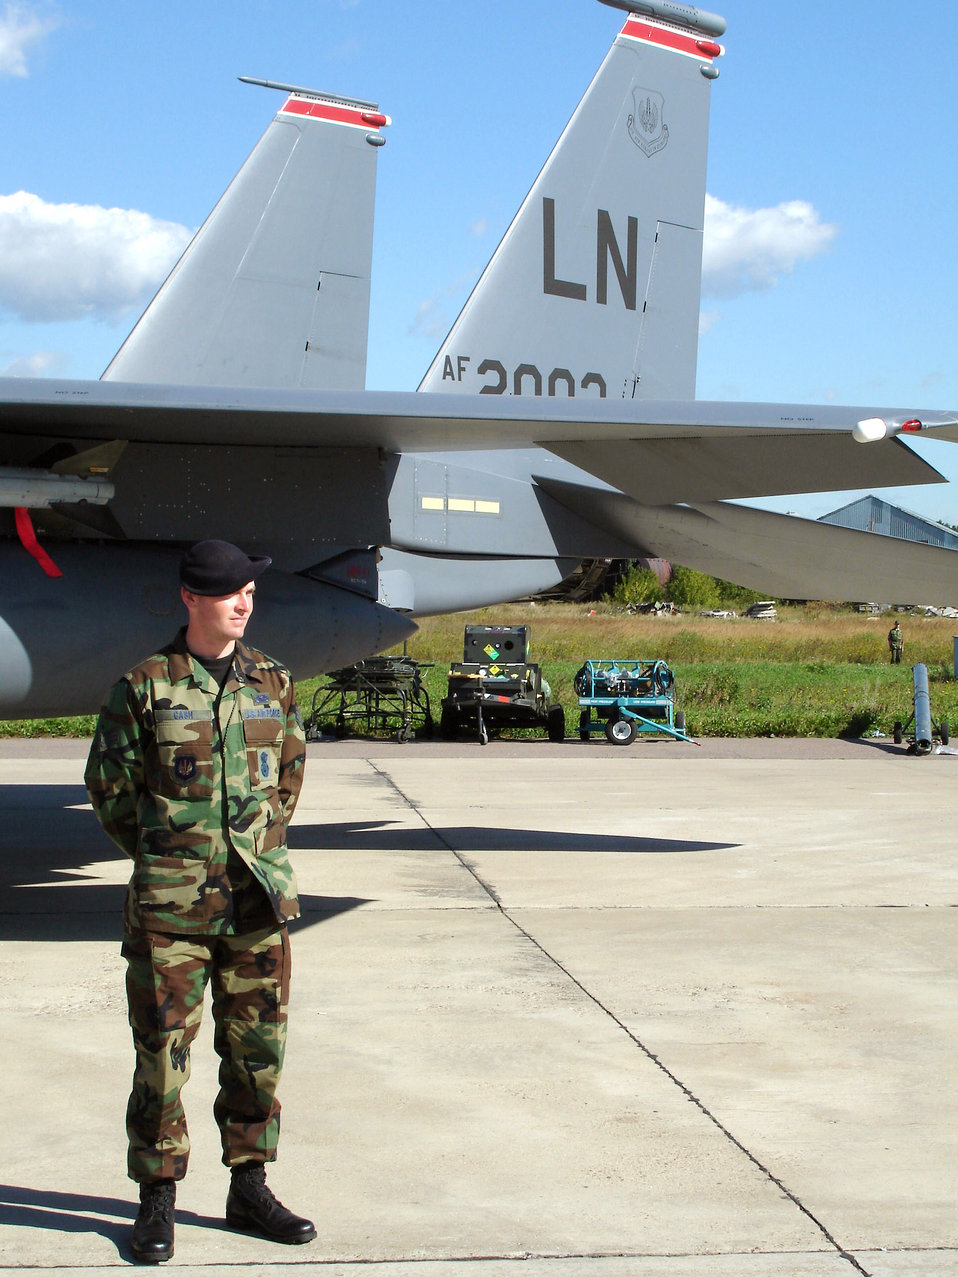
Moscow Air Show

ZHUKKOVSKY, Russia -- Senior Airman Larry Cash stands watch by an F-15E Strike Eagle during the Moscow International Air Show and Space Salon at Ramenskoye Airfield. Though U.S. security forces Airmen are not armed during the air show, they are responsible for maintaining security of the U.S. aircraft participating in the event. Airman Hurst is from Royal Air Force Lakenheath, England, and is the 48th Security Forces Squadron security response team leader.